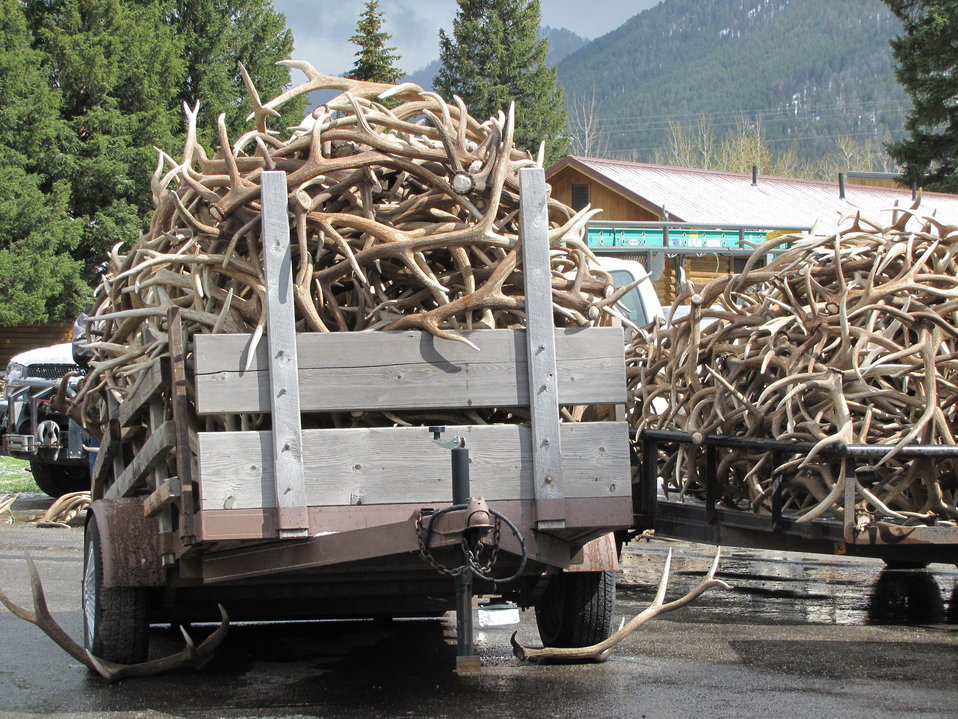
Ready for Transport

Antlers are loaded onto trailers, ready to be hauled to the auction.